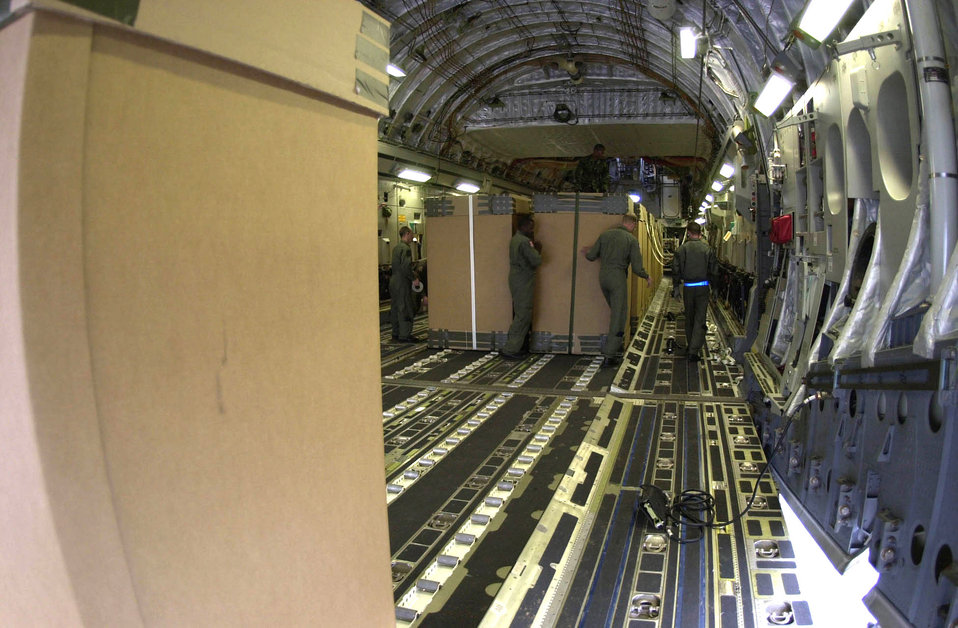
Loading

RAMSTEIN AIR BASE, Germany -- Airmen load containers with humanitarian daily rations on board a C-17 Globemaster III Oct. 4. The C-17 airdropped its cargo Oct. 7 over eastern Afghanistan as part of Operation Enduring Freedom.